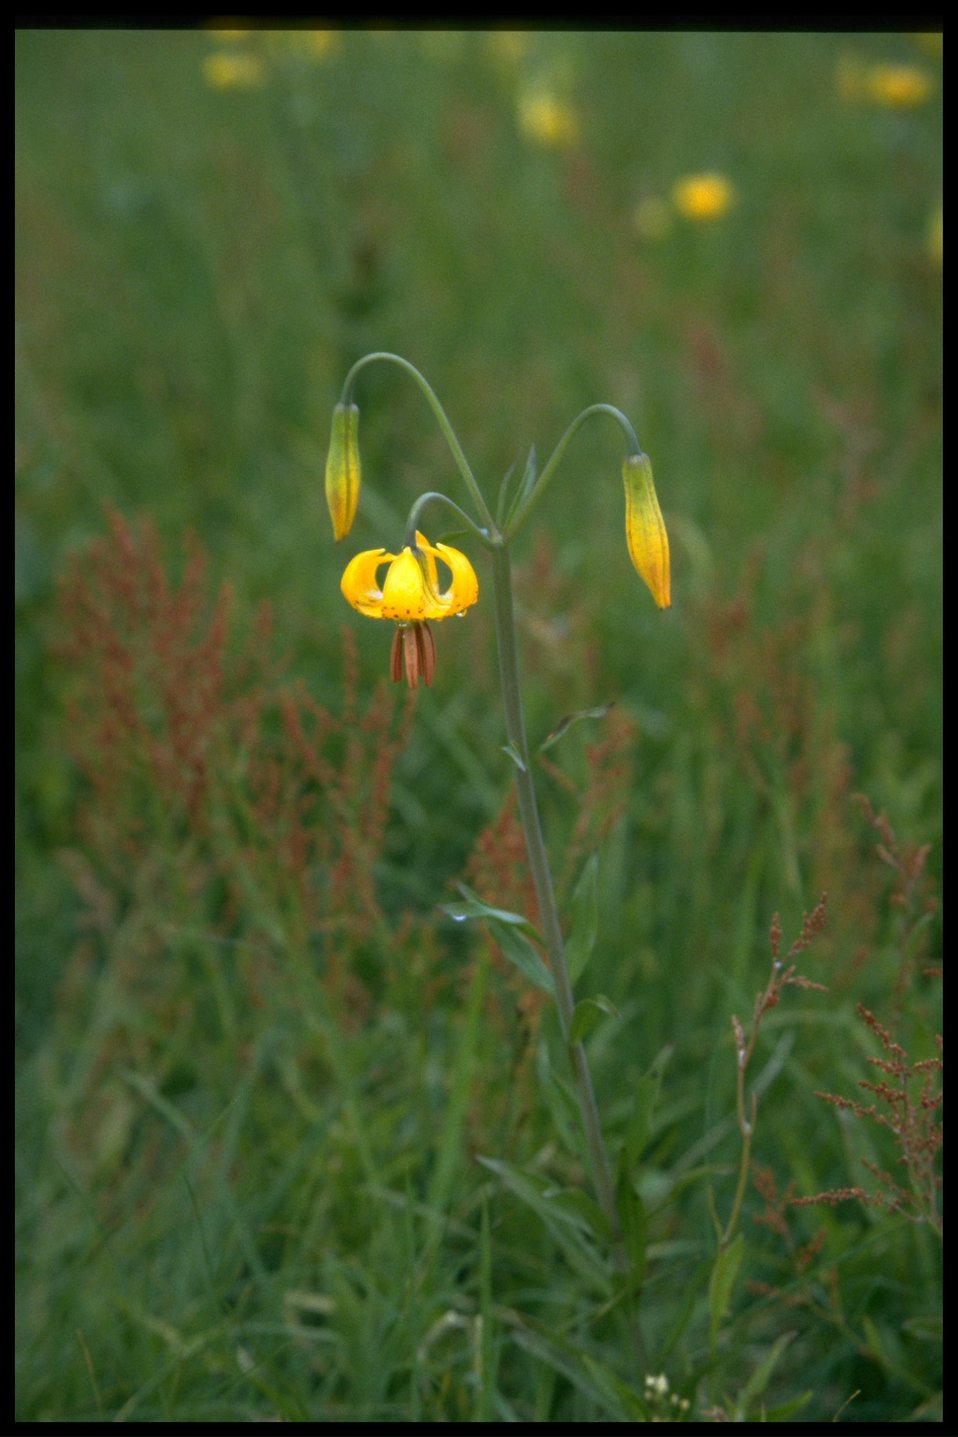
Farshot of tiger lily, Lilium columbianum.